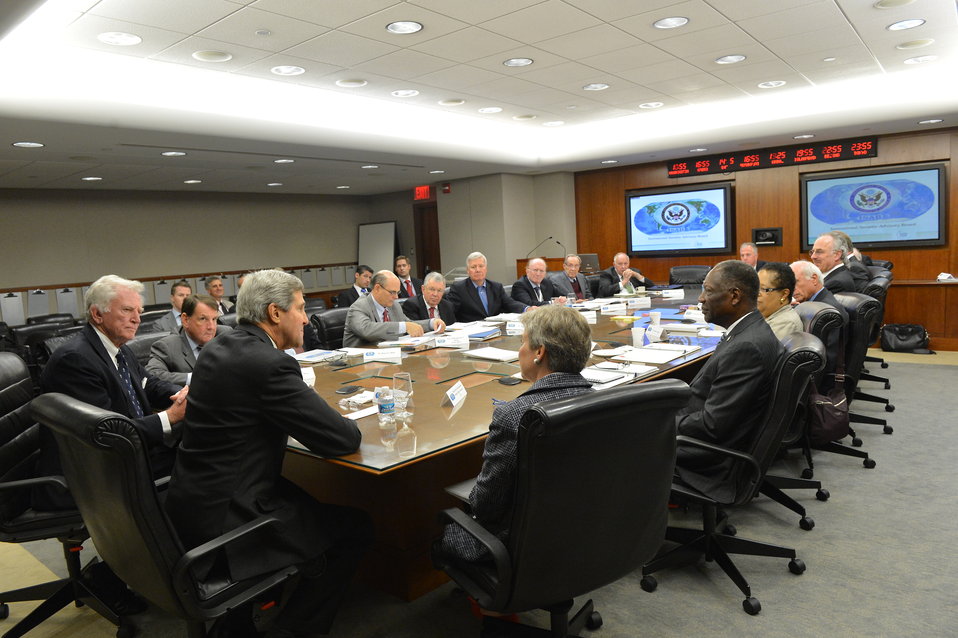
Secretary Kerry Delivers Remarks to the International Security Advisory Board

U.S. Secretary of State John Kerry delivers remarks to the International Security Advisory Board at the U.S. Department of State in Washington, D.C., on September 19, 2013.